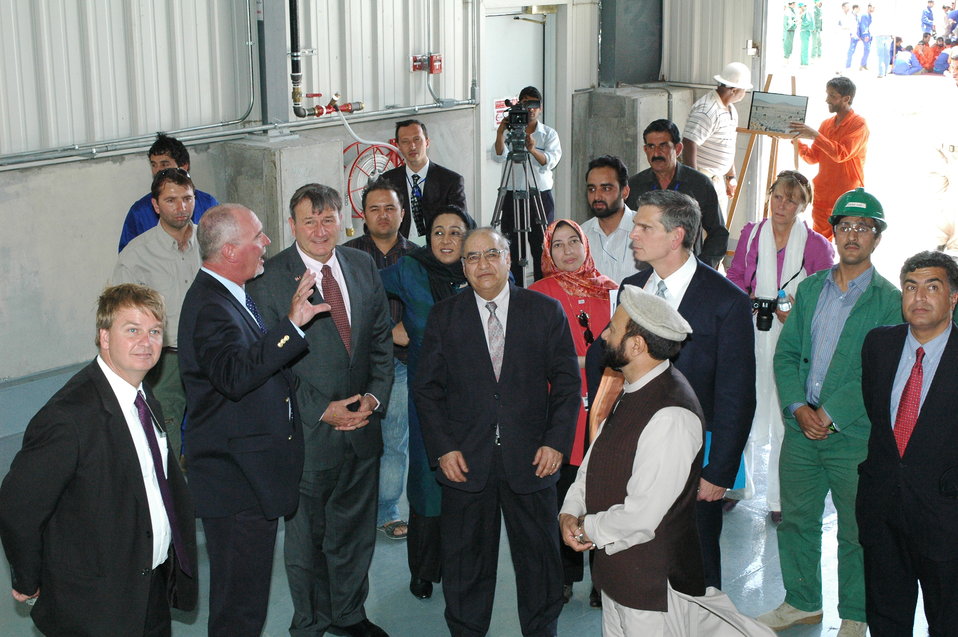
105 MW Tarakhil Power Plant Handover